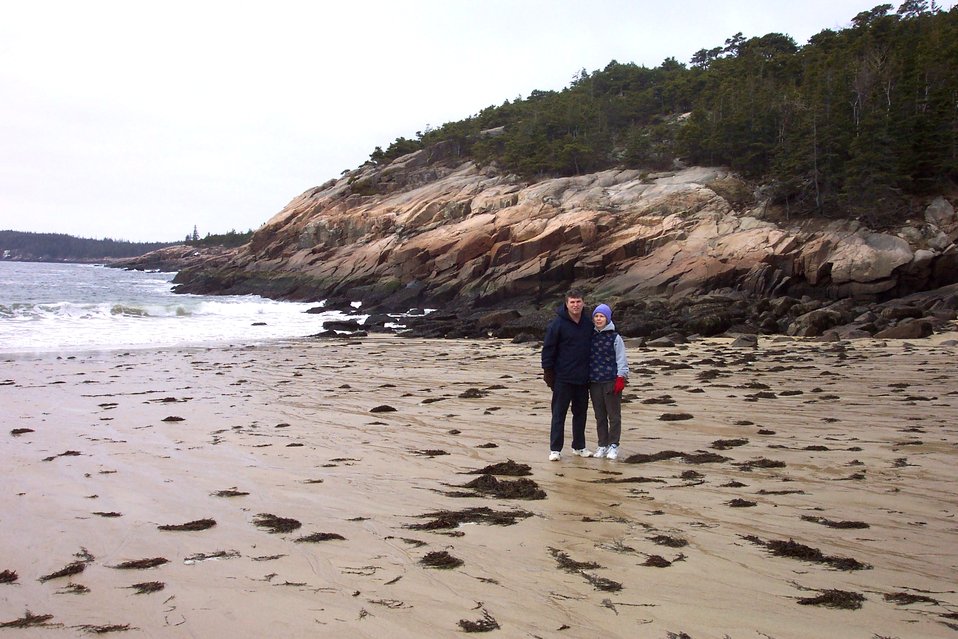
On the western side of Sand Beach looking south towards Thunder Hole area.